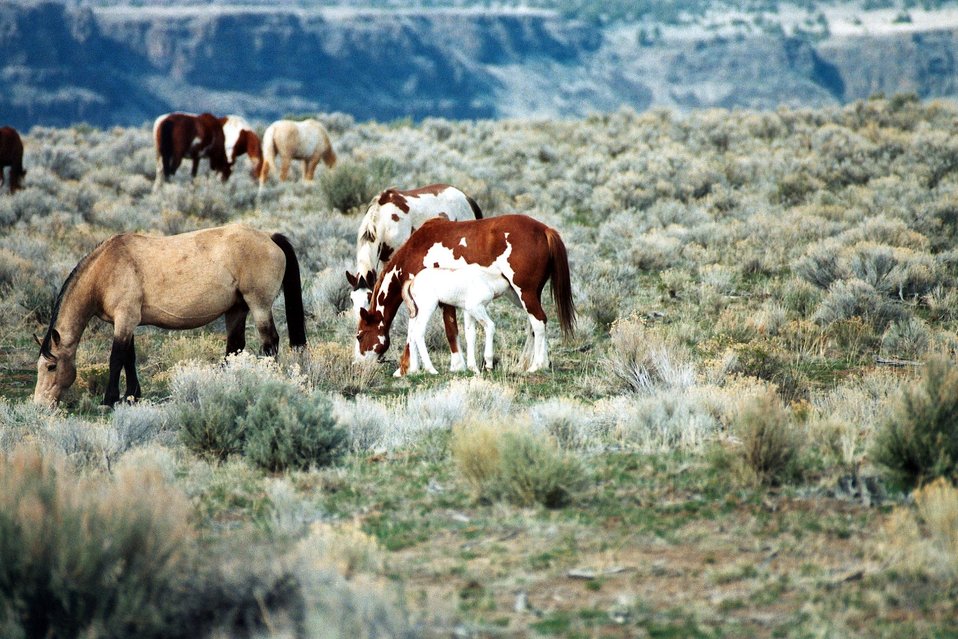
Medium shot of grazing mares and foal.